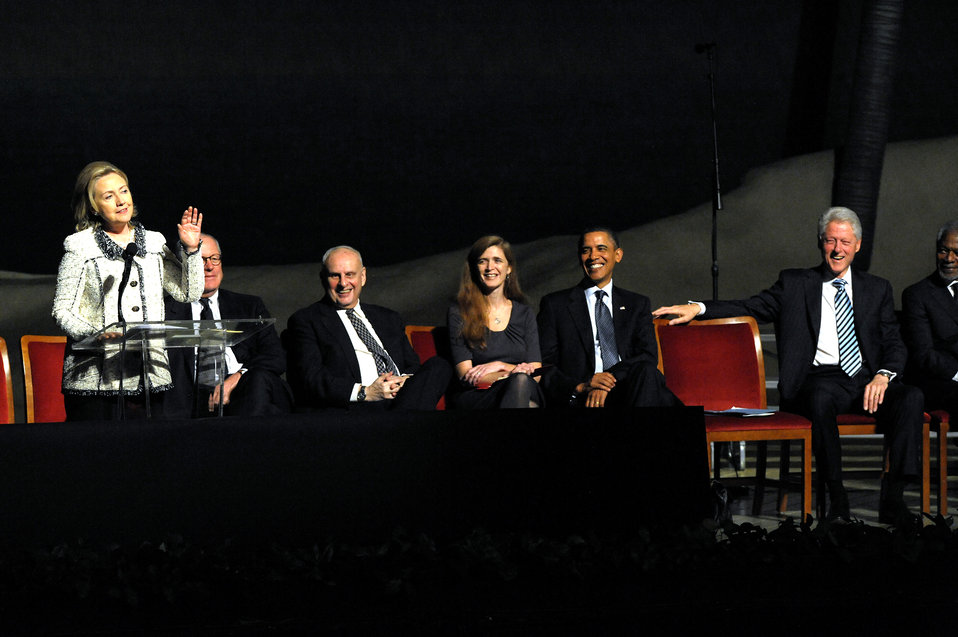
Secretary Clinton Delivers Remarks at Richard C. Holbrooke's Memorial Service

U.S. Secretary of State Hillary Rodham Clinton delivers remarks at the memorial service for Richard C. Holbrooke at the John F. Kennedy Center for the Performing Arts in Washington, D.C., on January 14, 2011. Former U.S. President Bill Clinton, right, and U.S. President Barack Obama, second from right, are sitting behind the Secretary.